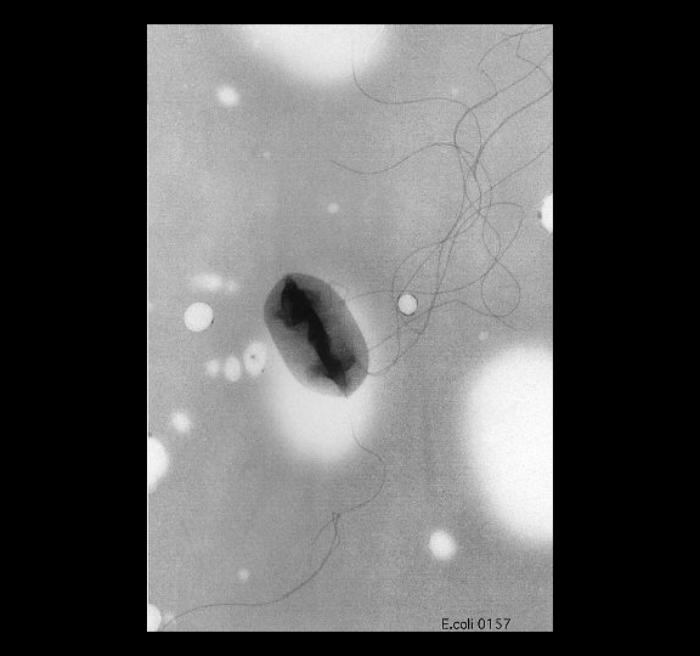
This transmission electron micrograph (TEM) revealed some of the ultrastructural morphology of a flagellated Escherichia coli O157:H7 bacterium. See PHIL 9995 for a colorized version of this image.